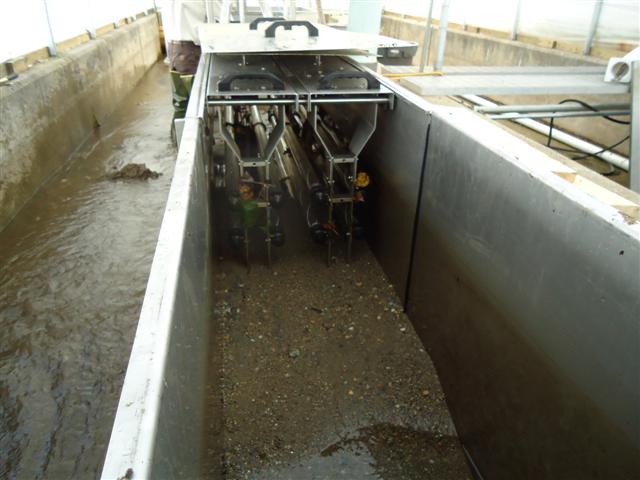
Storm damage at Eisenhower National Fish Hatchery in Vermont

UV bulb tubes scratched by sediment.